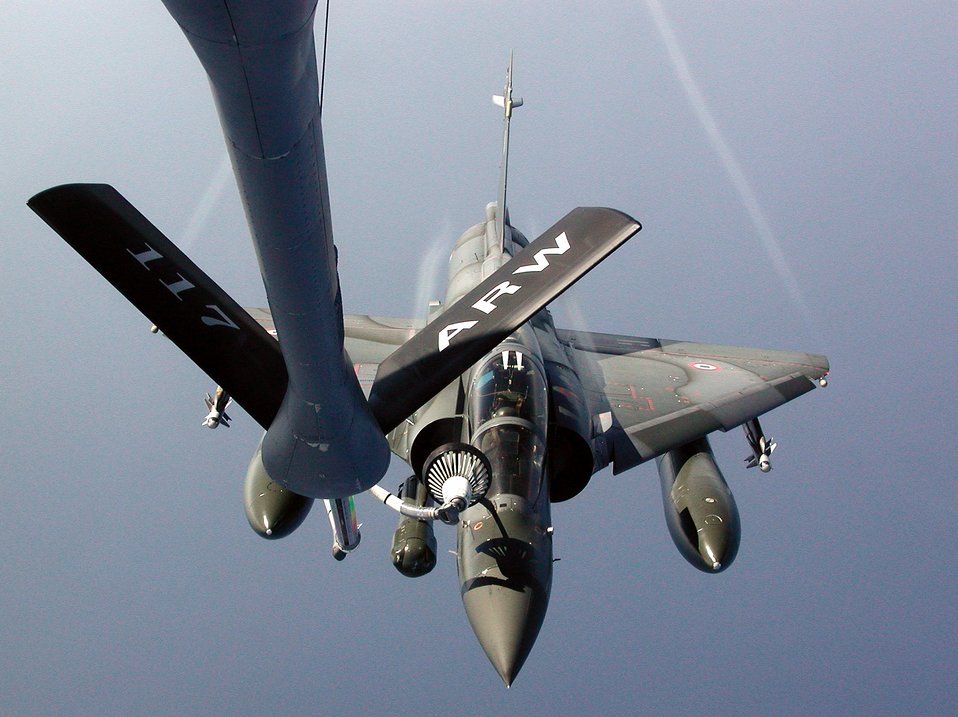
Airpower Summary for July 21, 2007

A KC-135 Stratotanker from the Alabama Air National Guard's 117th Air Refueling Wing refuels a French Mirage 2000. Tankers are essential to sustaining coalition air operations over Iraq and Afghanistan.